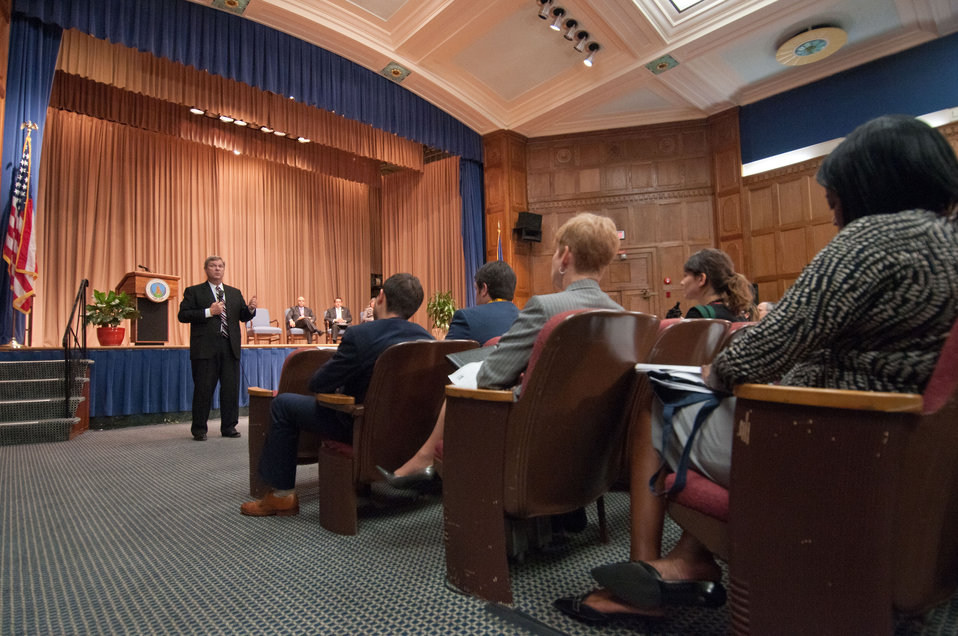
Agriculture Secretary Tom Vilsack took the floor to present his keynote speech at the National Hispanic Heritage Month observance at Jefferson Auditorium at the United States Department of Agriculture (USDA) in Washington, D.C. on Thursday, September 15, 2011.